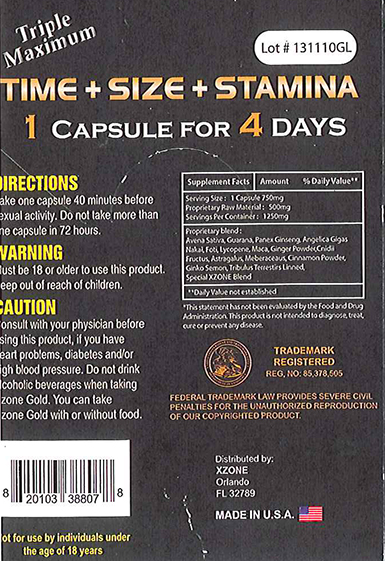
RECALLED – Dietary Supplement

April 1, 2014 – Product Recall – Nova Products, Inc. Issues Voluntary Nationwide Recall of Dietary Supplements with Undeclared Active Pharmaceutical Ingredients.